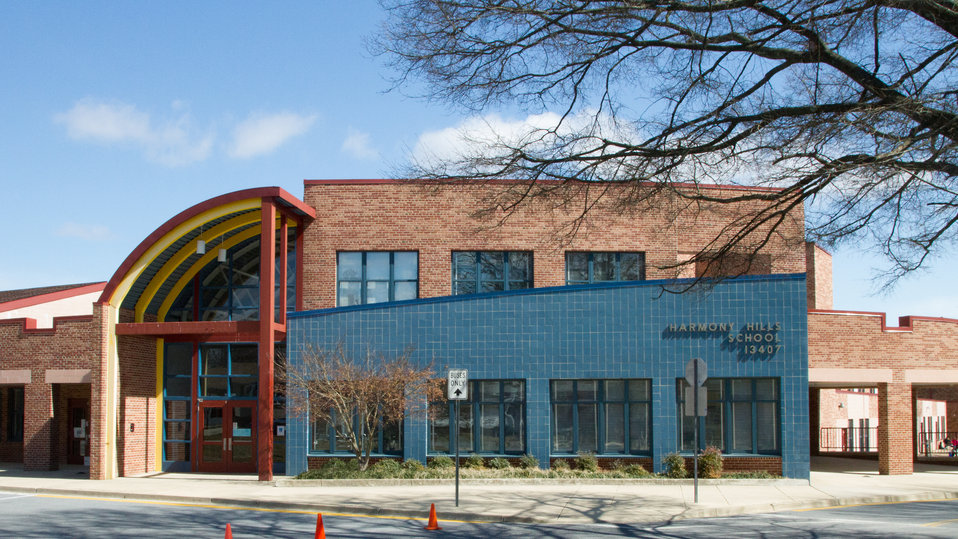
Department of Agriculture (USDA) Food, Nutrition and Consumer Services (FNS) Deputy Under Secretary Dr. Janey Thornton participates in the inaugural International School Meals Day at Harmony Hills Elementary School in Silver Spring, MD, on Friday, March 8, 2013, in Silver Spring, VA. Mr. Damian Grasso's 5th grade class was paired with Mrs. Karen McAllister’s class at Dalry Primary School in North Ayrshire, Scotland, United Kingdom. Using a real-time online video website service, the children shared some of the healthy eating and physical activity choices available to them. The Dalry fitness program includes Zumba classes, and Harmony Hills includes a Fitness Club. Both schools have soccer programs. The Harmony Hills 5th grade students shared their thoughts about their healthy menu items, mango, kiwi, and hummus. The Dalry students honored the Maryland students, by having prepared a Southern Maryland dessert, Smith Island cake (made with 7 thin cake layers).